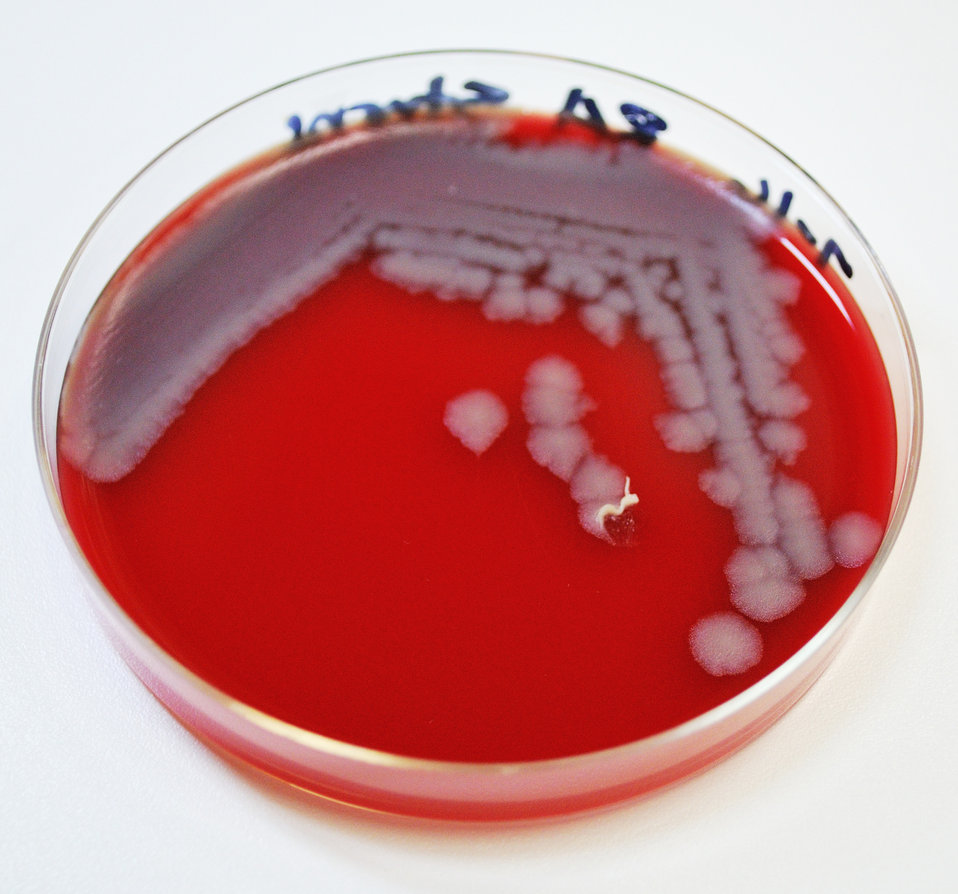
This image depicted Bacillus anthracis bacterial colonies, which had been allowed to grow on sheep's blood agar (SBA) for a 24 hour period. Note the classical appearance exhibited in the colonial morphology including a ground-glass, non-pigmented texture with accompanying 'comma' projections from some of the individual rough-edged colonies. In this particular view, you'll note that a 'tenacity test' had been performed using an iinoculating loop, which proved positive for B. anthracis, causing the 'colony to 'stand up' like beaten egg white'.What is anthrax?